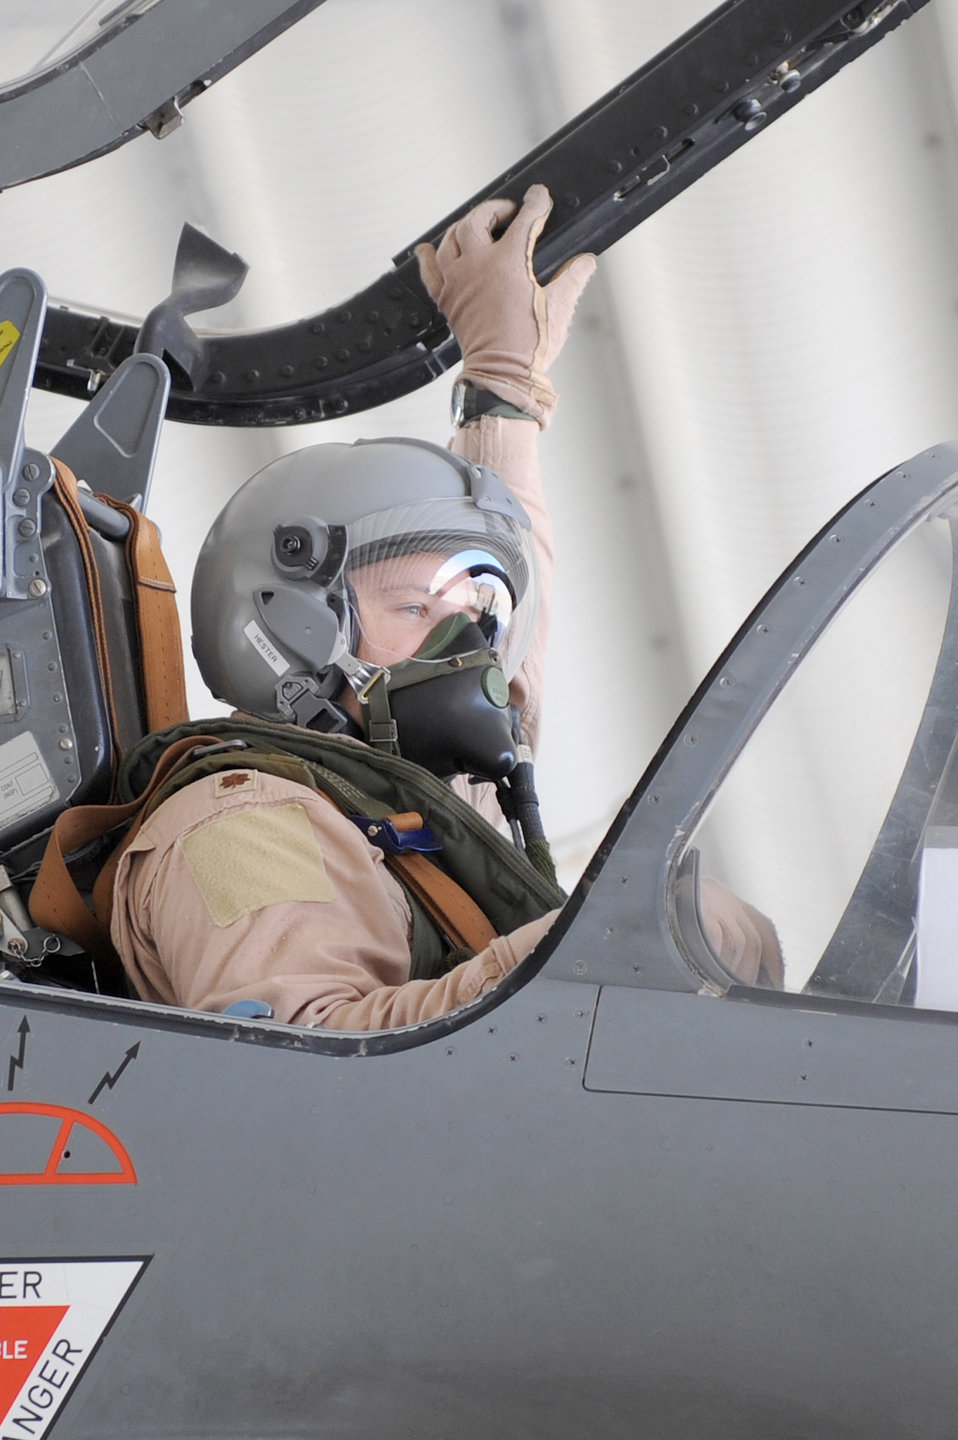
US, French pilot swap

Major Skyler Hester closes the Mirage 2000D canopy before departing for a combat mission Nov. 11, 2010, at Kandahar Airfield, Afghanistan. Major Hester is an instructor pilot assigned to the French 1/3 Fighter Squadron. He is deployed with the French unit as part of the three-year foreign exchange pilot program.